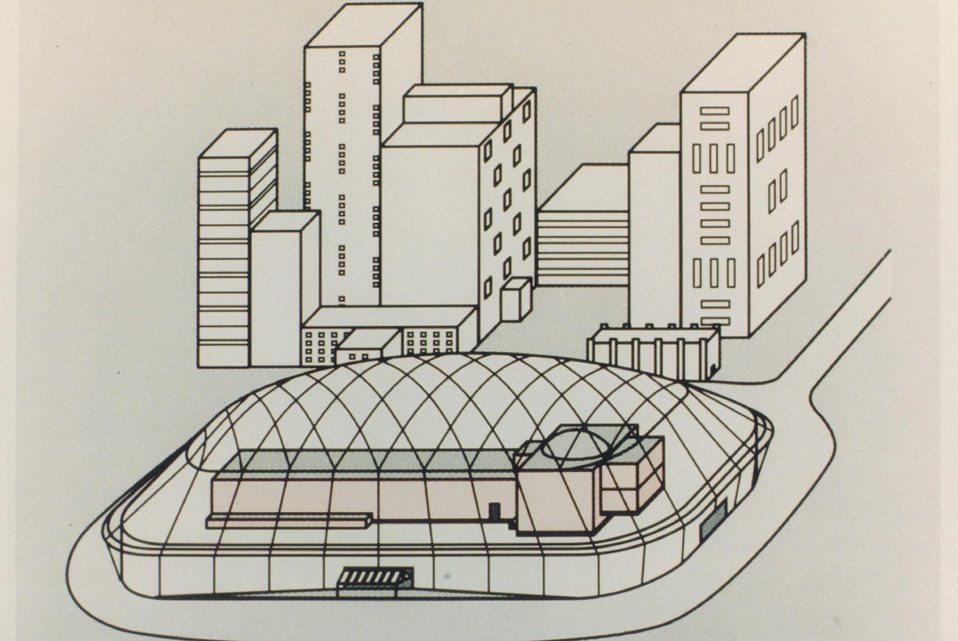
THE PROPOSED NIF BUILDING COMPARED TO THE MINNEAPOLIS METRODOME.

THE PROPOSED NIF BUILDING IS ABOUT 200 METERS LONG BY 85 METERS WIDE (600 X 250 FEET). THESE DIMENSIONS ARE CLOSE TO THOSE OF A TYPICAL COVERED FOOTBALL STADIUM. SCHEDULED TO BEGIN OPERATION IN 2002, NIF, THE LARGEST INERTIAL FUSION LASER SYSTEM, WILL BE AN INTERNATIONAL RESEARCH CENTER, SERVING SCIENTISTS WORLDWIDE. NIF IS AN IMPORTANT PART OF DOE'S SCIENCE BASED STOCKPILE STEWARDSHIP PROGRAM HELPING TO ENSURE CAPABILITY OF THE NUCLEAR STOCKPILE WITHOUT UNDERGROUND TESTING.